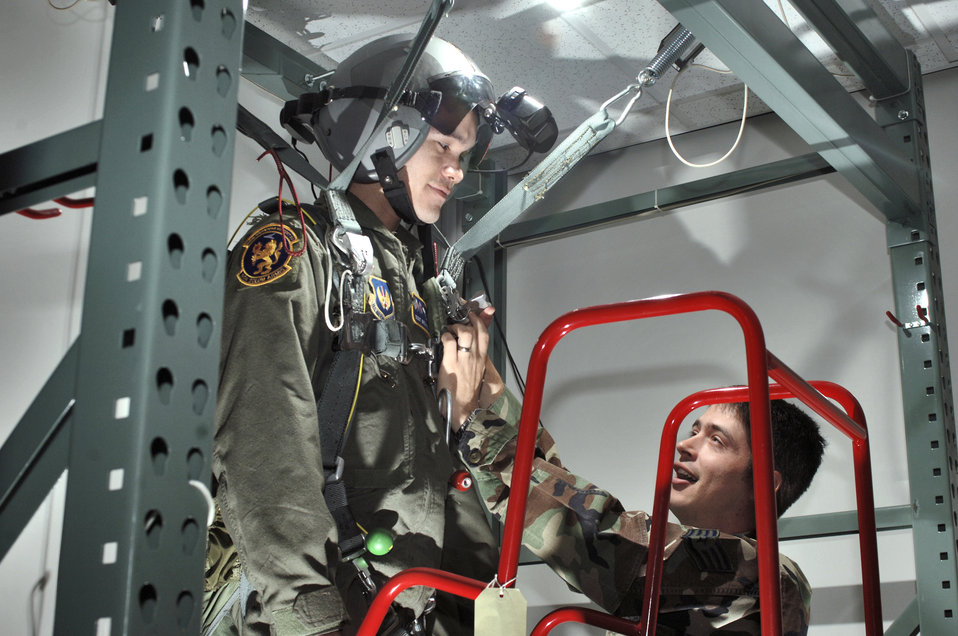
Parachute practice makes perfect

Staff Sgt. Alan Pratt checks the ripcord on Staff Sgt. Will Perdew's parachute before he takes off on a virtual parachute ride in the life support facility at Royal Air Force Mildenhall, England, on Thursday, Aug. 3. Sergeant Pratt is an aircrew life support specialist with the 100th Operations Support Squadron. Sergeant Perdew is a KC-135 Stratotanker boom operator with the 351st Air Refueling Squadron.